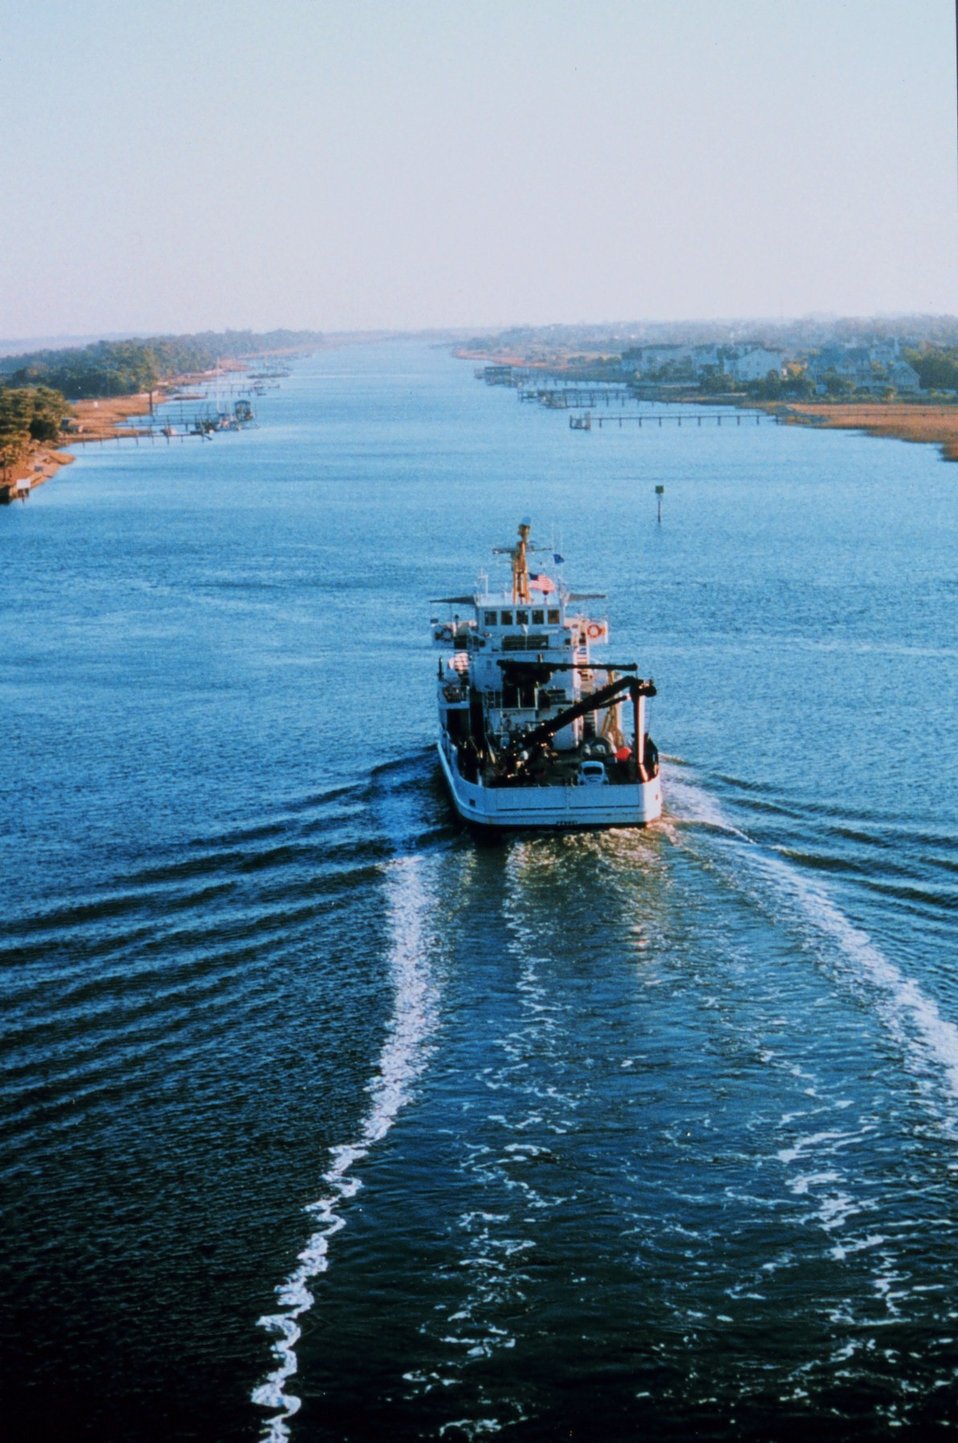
NOAA Ship FERREL in Intracoastal Waterway north of Charleston